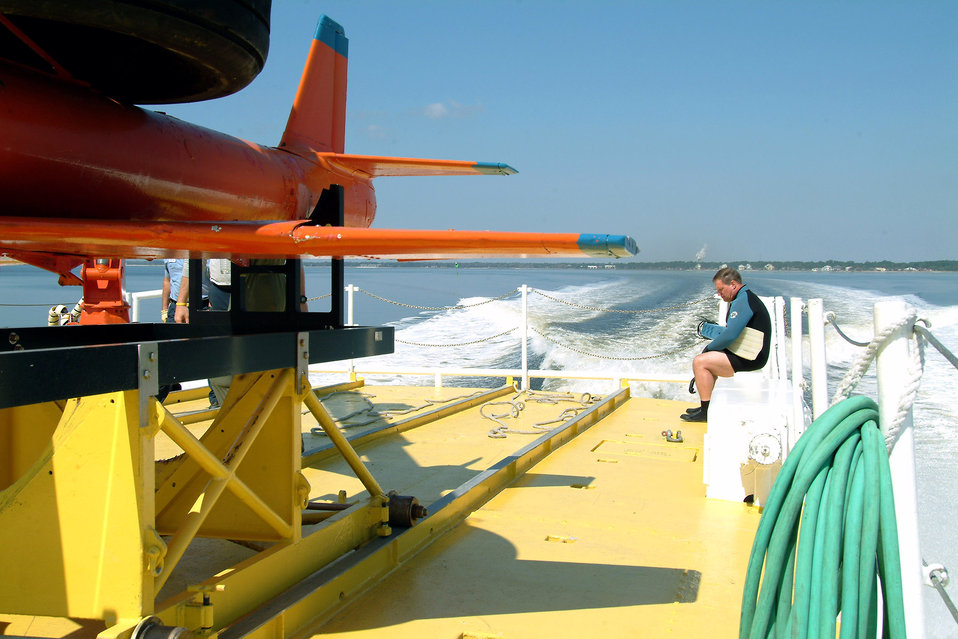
Air Force's navy

Steve Shafer prepares his wetsuit before going into the waters of the Gulf of Mexico to demonstrate the sub-scale drone recovery process March 26 in the waters off of Tyndall Air Force Base, Fla. The ship, one of three 120-foot boats owned by the Air Force, is used to help recover sub-scale drones after they are shot down during live fire exercises. The ships are part of the 82nd Aerial Targets Squadron.